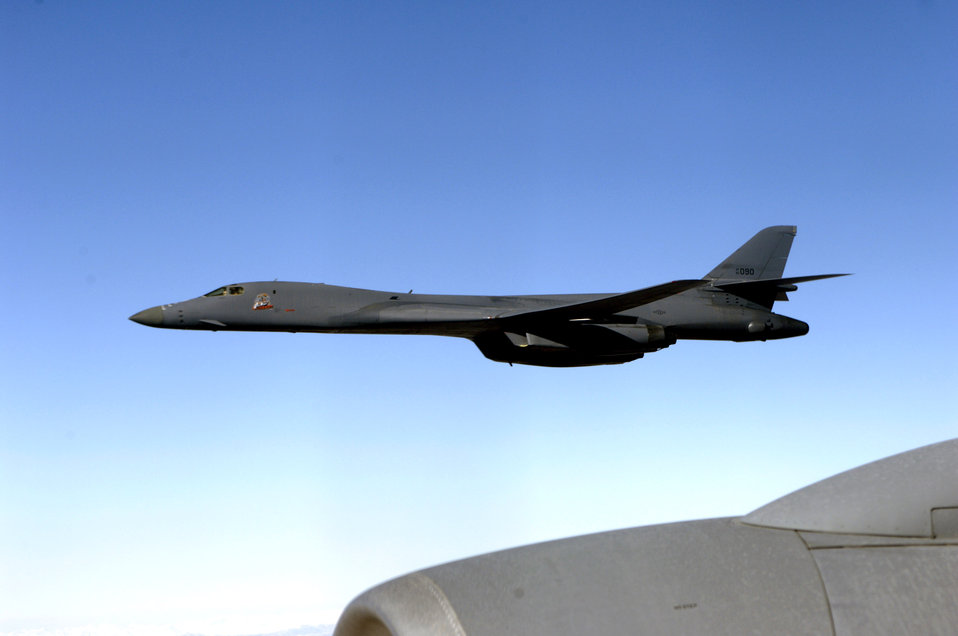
B-1Bs protect convoys

A B-1B Lancer pulls alongside a KC-135 Stratotanker after receiving fuel over Afghanistan.